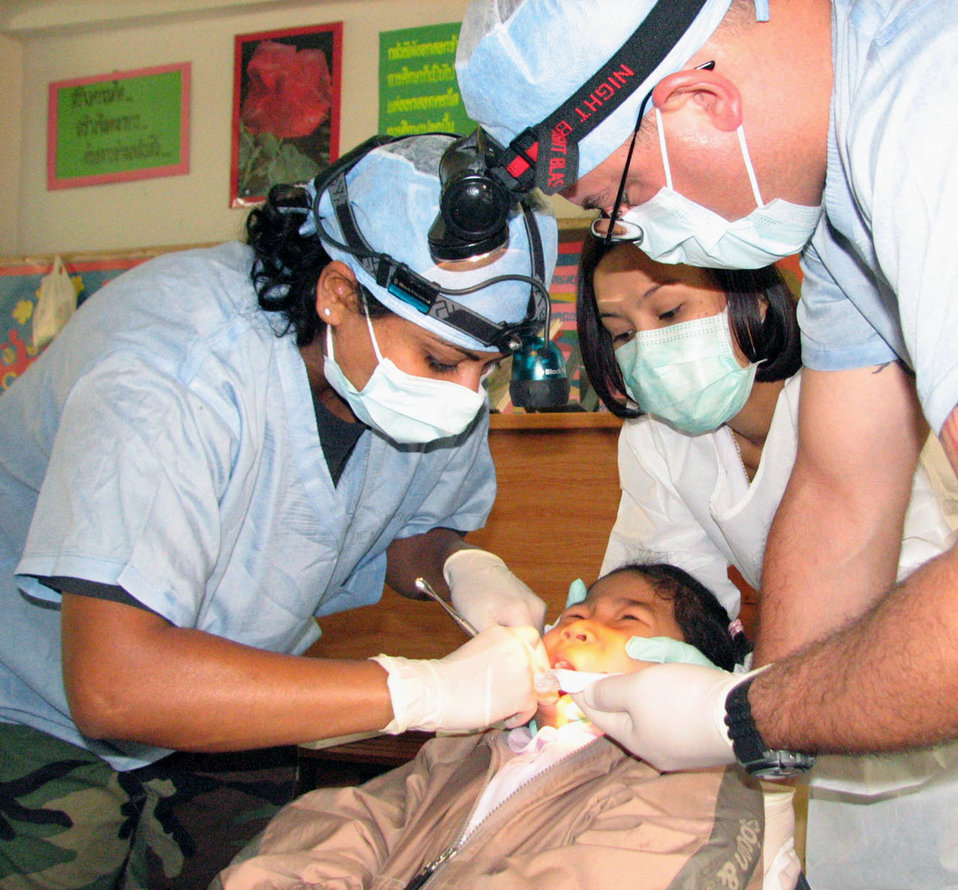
Air Force team performs goodwill mission in Thailand

Capt. (Dr.) Ketu Lincoln (left) extracts a tooth from 8-year-old Apiwat Kitjumgnong with assistance from Senior Airman Joel Peace and a Thai dental assistant during a goodwill visit to the Thairat 72 school in Udon Thani, Thailand. This medical-dental goodwill mission is the second civil-action project in Thailand as part of exercise Cope Tiger 2007. Captain Lincoln and Airman Peace are from the 18th Dental Squadron at Kadena Air Base, Japan.